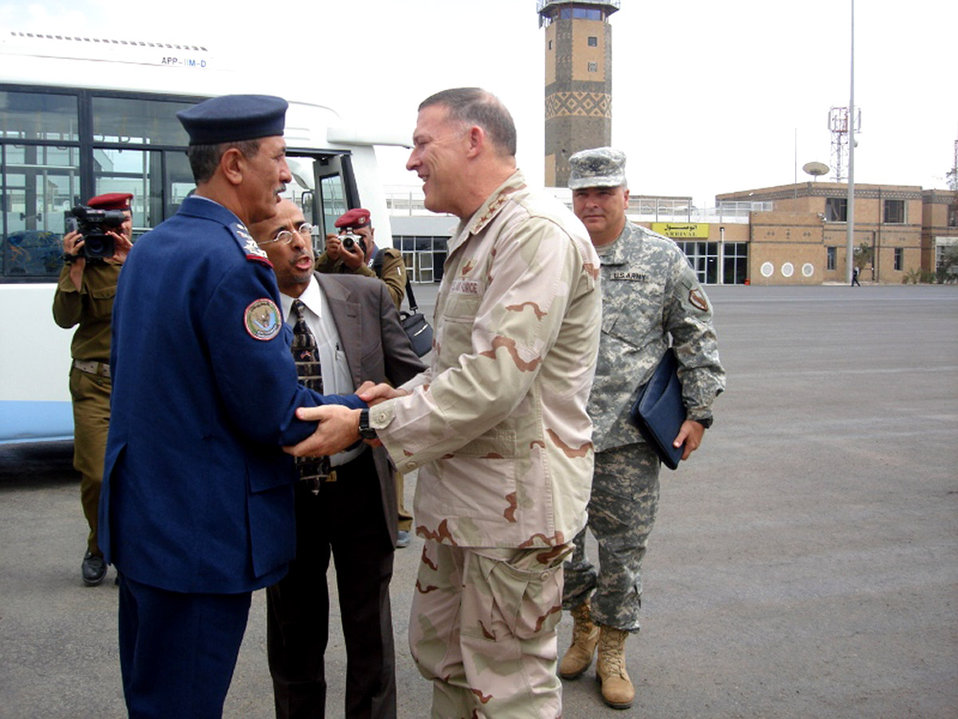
Senior air operations official visits Yemen

Gen. Ibrahim Al Kibsi of the Yemeni air force greets Lt. Gen. Gary L. North upon his arrival at the Sana'a airport Feb. 7 in Yemen. General North is the commander of U.S. Central Command Air Forces and met with senior Yemini air force officials and the U.S. ambassador to Yemen.